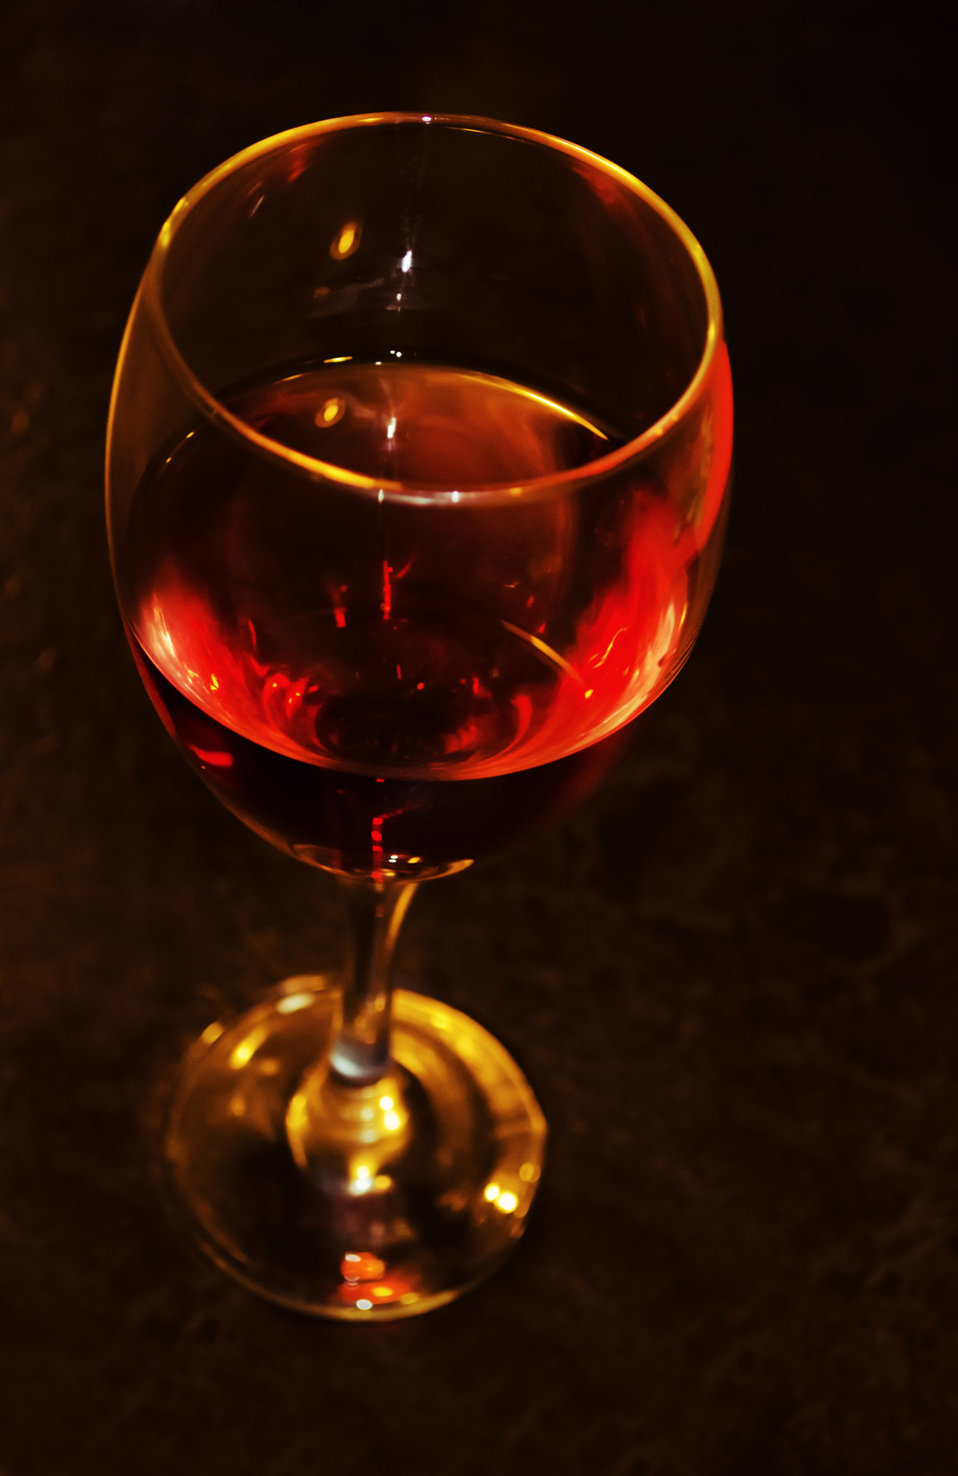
Glasses of wine.